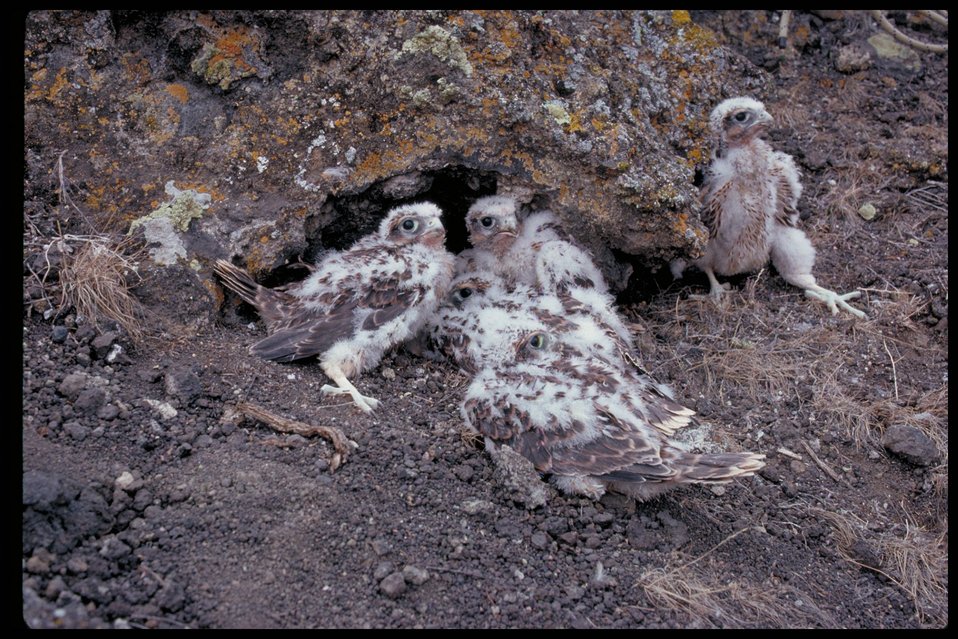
Birds of Prey National Conservation Area BOP Owyhee Field Office LSRD Lower Snake River District